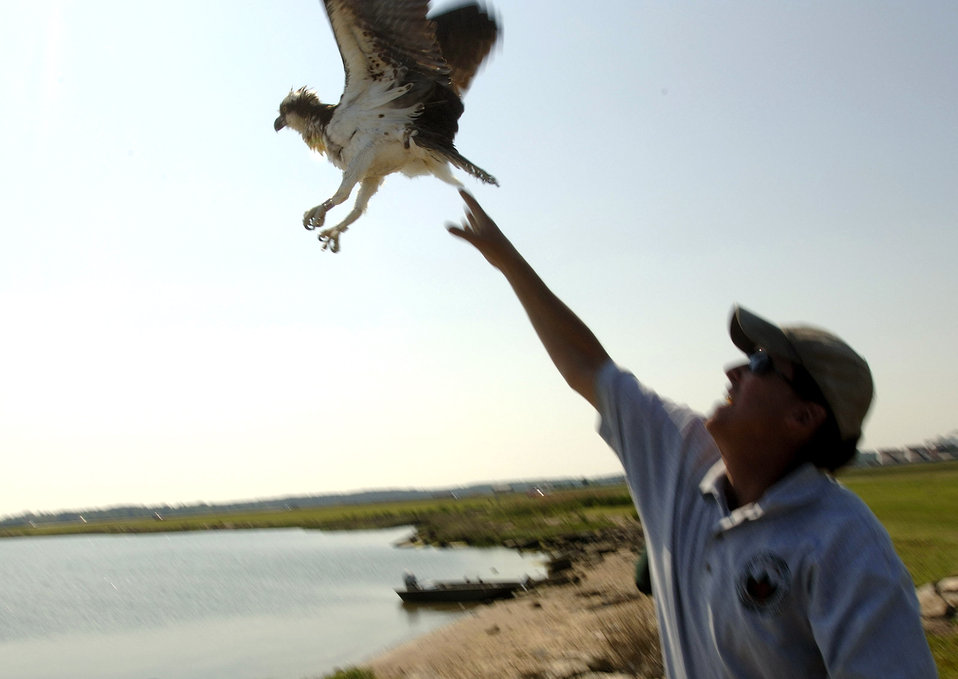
Osprey tracking

Brian Dorr of the U.S. Department of Agriculture releases an osprey after it was trapped and fitted with a tracking devise at Langley Air Force Base, Va., on Wednesday, May 17, 2006. The department is collecting, tagging and tracking the birds to reduce conflicts with base aircraft.